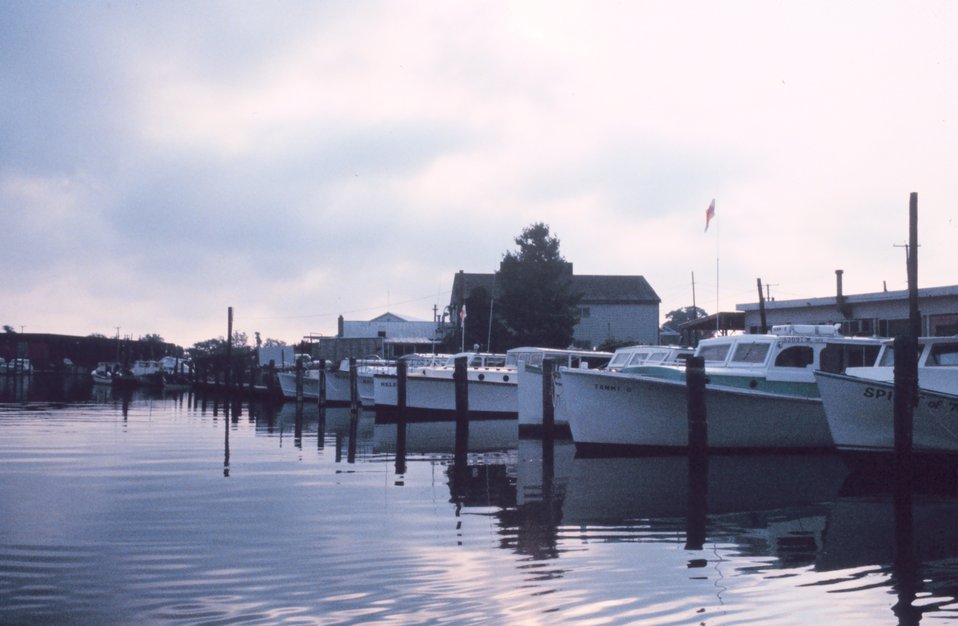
A fleet of small charter fishing boats in port.